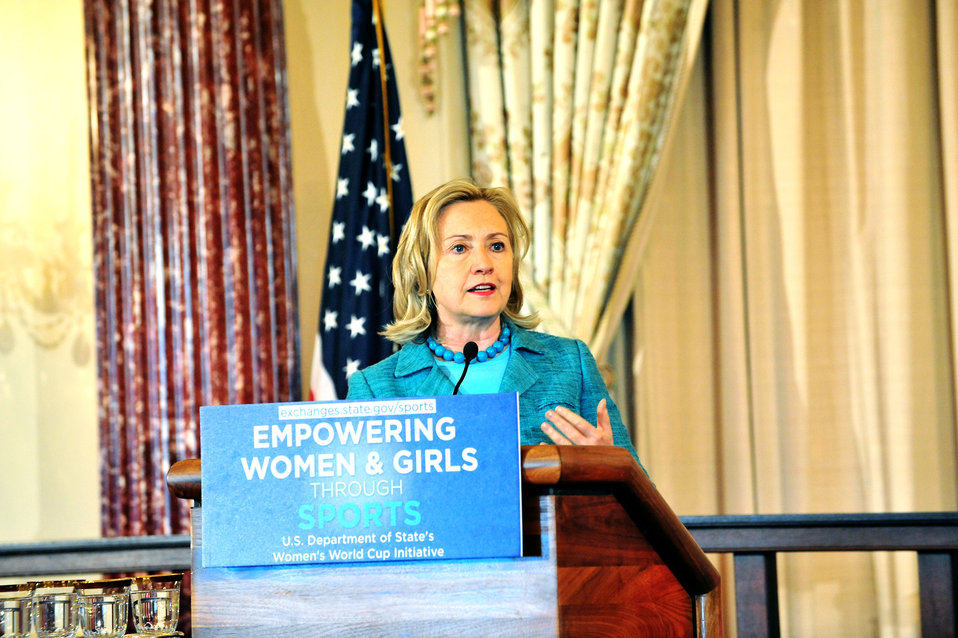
Secretary Clinton Launches the Women's World Cup Initiative and Marks the Kick-Off of the 40th Anniversary Year of Title IX

U.S. Secretary of State Hillary Rodham Clinton launches the Women's World Cup Initiative and marks the kick-off of the 40th Anniversary Year of Title IX, at the U.S. Department of State in Washington, D.C., on June 6, 2011.